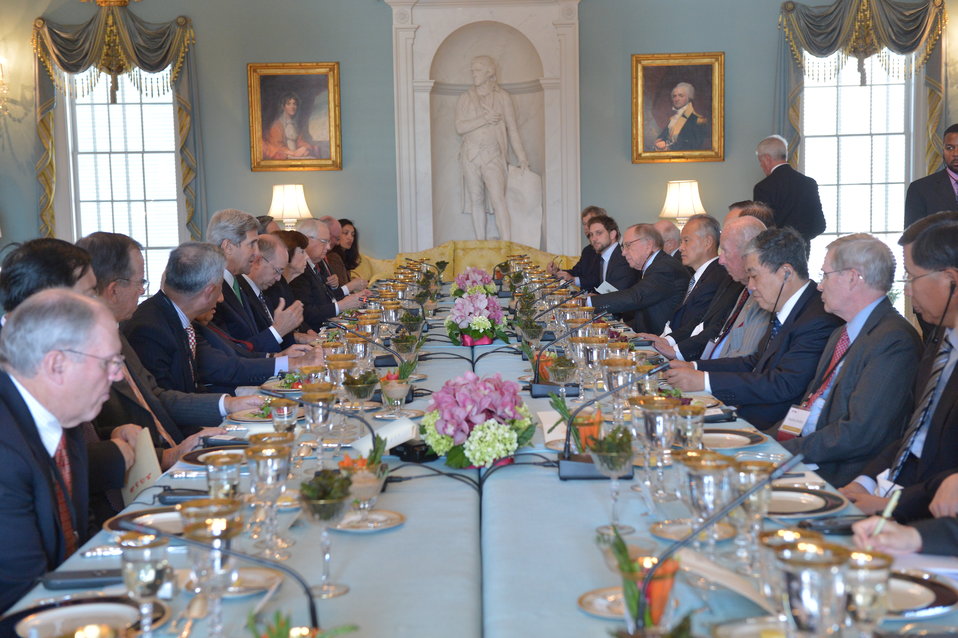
Secretary Kerry Hosts a Lunch for the U.S.-China Track II Dialogue Delegations

U.S. Secretary of State John hosts a lunch for the U.S.-China Track II Dialogue delegations, led by Dr. Henry Kissinger, Dr. George Shultz, and former State Councilor Tang Jiaxuan, at the U.S. Department of State in Washington, D.C., on October 15, 2013.